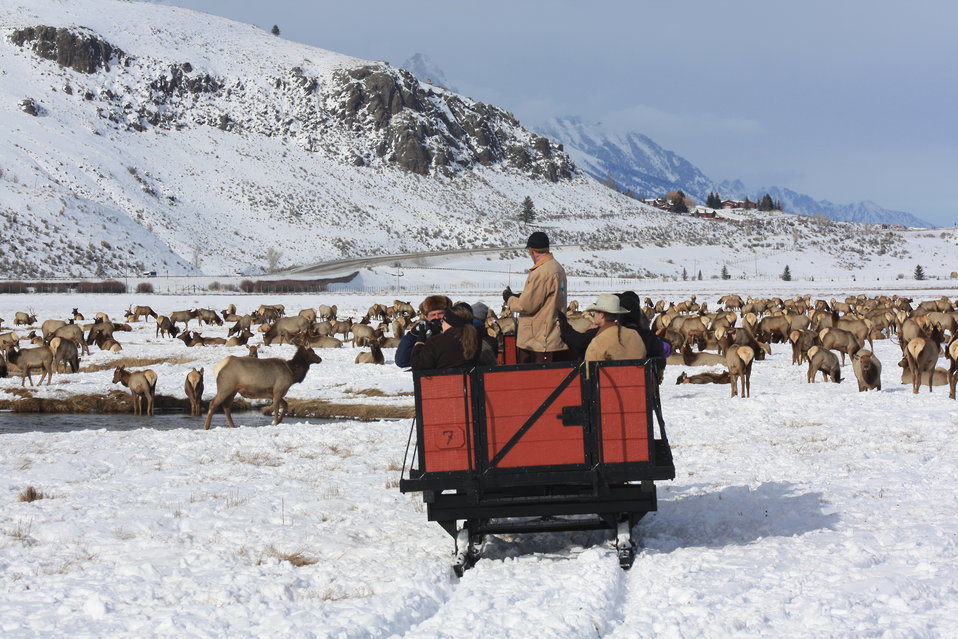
A Unique Wildlife Viewing Experience

The National Elk Refuge's most popular porgram is a winter sleigh ride onto the refuge. The unique experience provides a spectacular wildlife viewing opportunity. Approximately 20,000 people per year participate in the sleigh ride program.